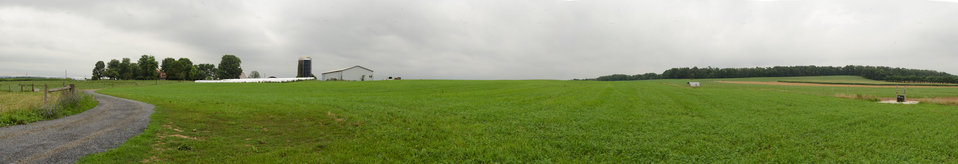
Nick’s Organic Farm, in Adamstown, MD, on Friday, July 12, 2013. The farm, owned by Nick Maravell, produces Black Angus beef, chicken, turkey, eggs, hay, soybeans, corn, alfalfa, orchard grass, rye; and other crops. The cattle are100% grass-fed receiving certified organic pasture, certified organic hay (in winter), water and mineral salts mixed with sea kelp. The cattle are not fed hormones, antibiotics or animal products. Poultry feed from grain is ground from organic grain. The poultry also graze on organic pastures. The farm has conducted on-farm research with federal, state and non-profit agencies to refine organic practices.USDA Photos by Lance Cheung.